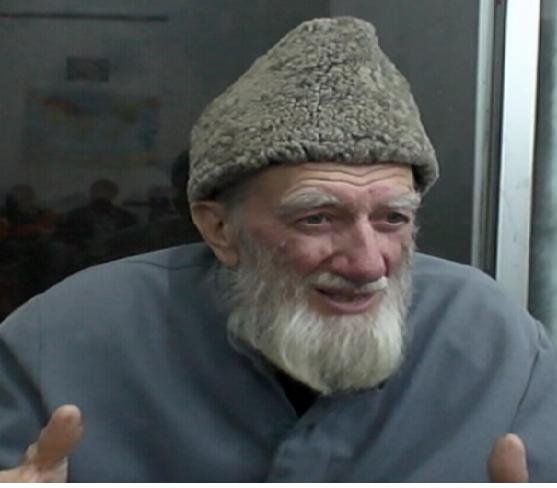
Said in 2006